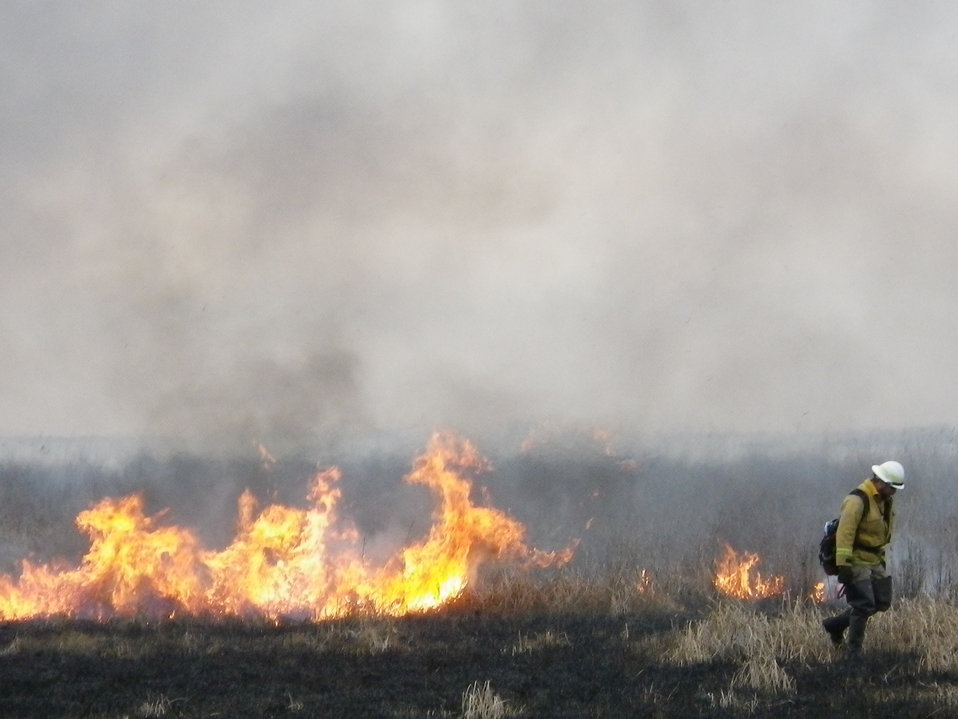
Keeping Fire on Our Side in Maryland

March, 2011, Eastern Neck National Wildlife Refuge, Maryland: U.S. Fish and Wildlife Service Fire Management Officer Art Canterbury lights a controlled burn with a drip torch in a brackish marsh at the refuge.